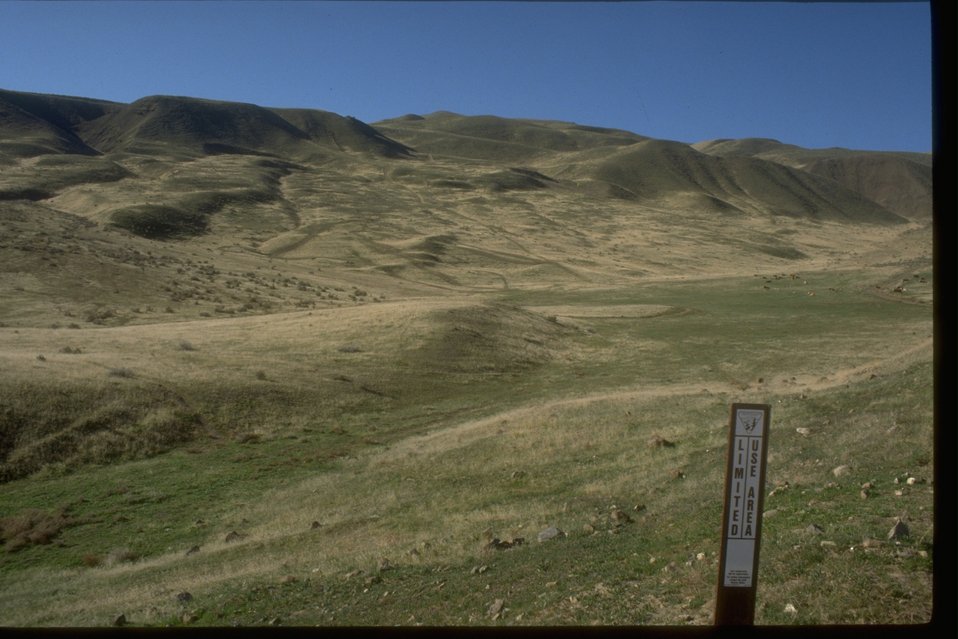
Limited Use Area" sign in Saddle Mountains Management Area.